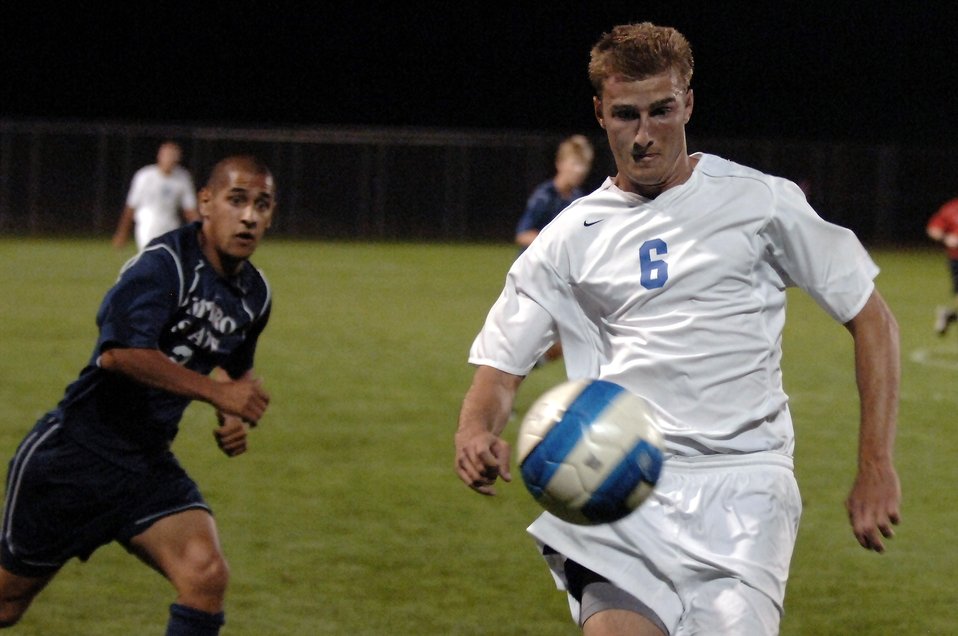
Academy soccer

Cadet 1st Class Ian Hauck battles for control of the ball during a men's exhibition soccer match Aug. 25 against Metropolitan State College of Denver at the U.S. Air Force Academy in Colorado Springs, Colo.